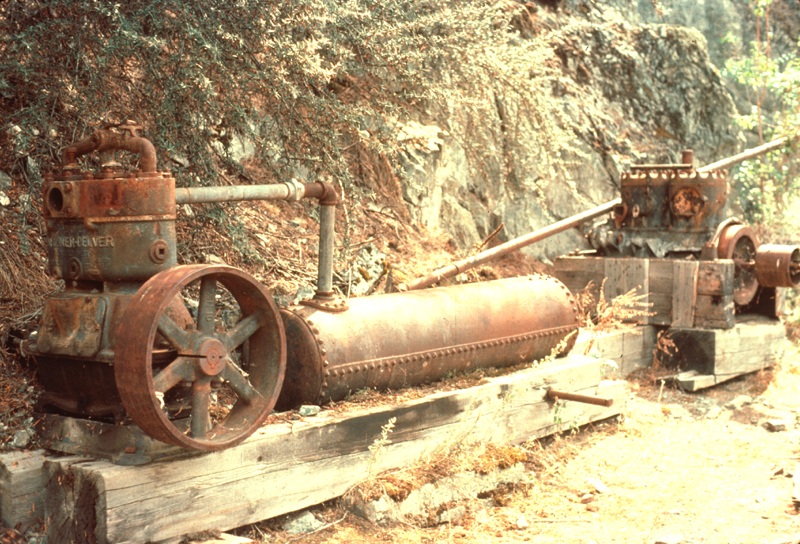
Mining Equipment Lower Salmon River Cottonwood Field Office Upper Columbia Salmon Clearwater District